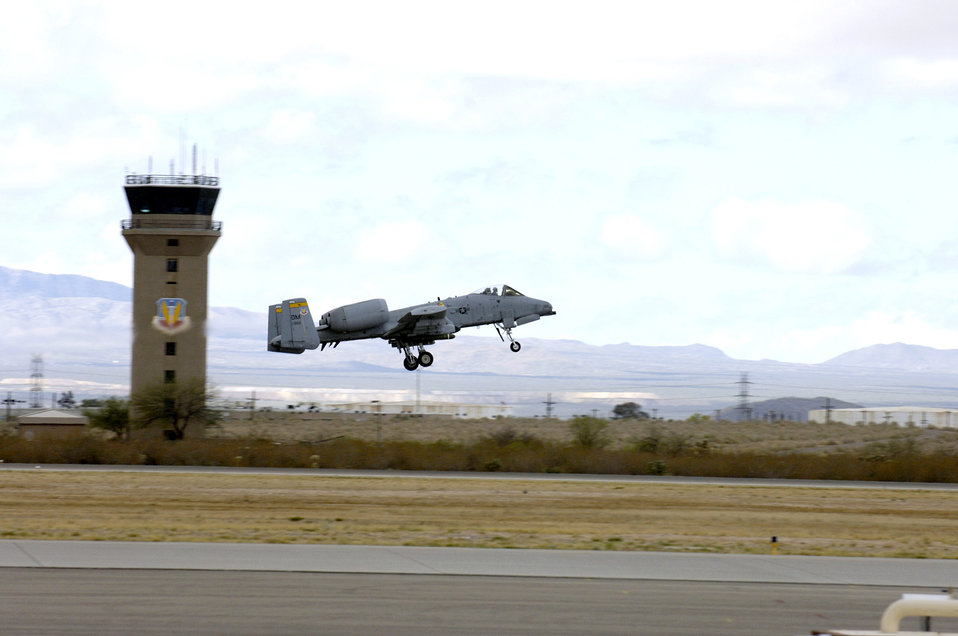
Ready for takeoff

Maj. Vernie Pendley takes off in his A-10 Thunderbolt II during exercise Bushwhacker 06-02 at Davis-Monthan Air Force Base, Ariz., on Wednesday, April 05, 2006. Bushwhacker 06-02 is a Phase I and Phase II exercise demonstrating the 355th Wing's ability to prepare to deploy and fight when called. Major Pendley is with the 354th Fighter Squadron.